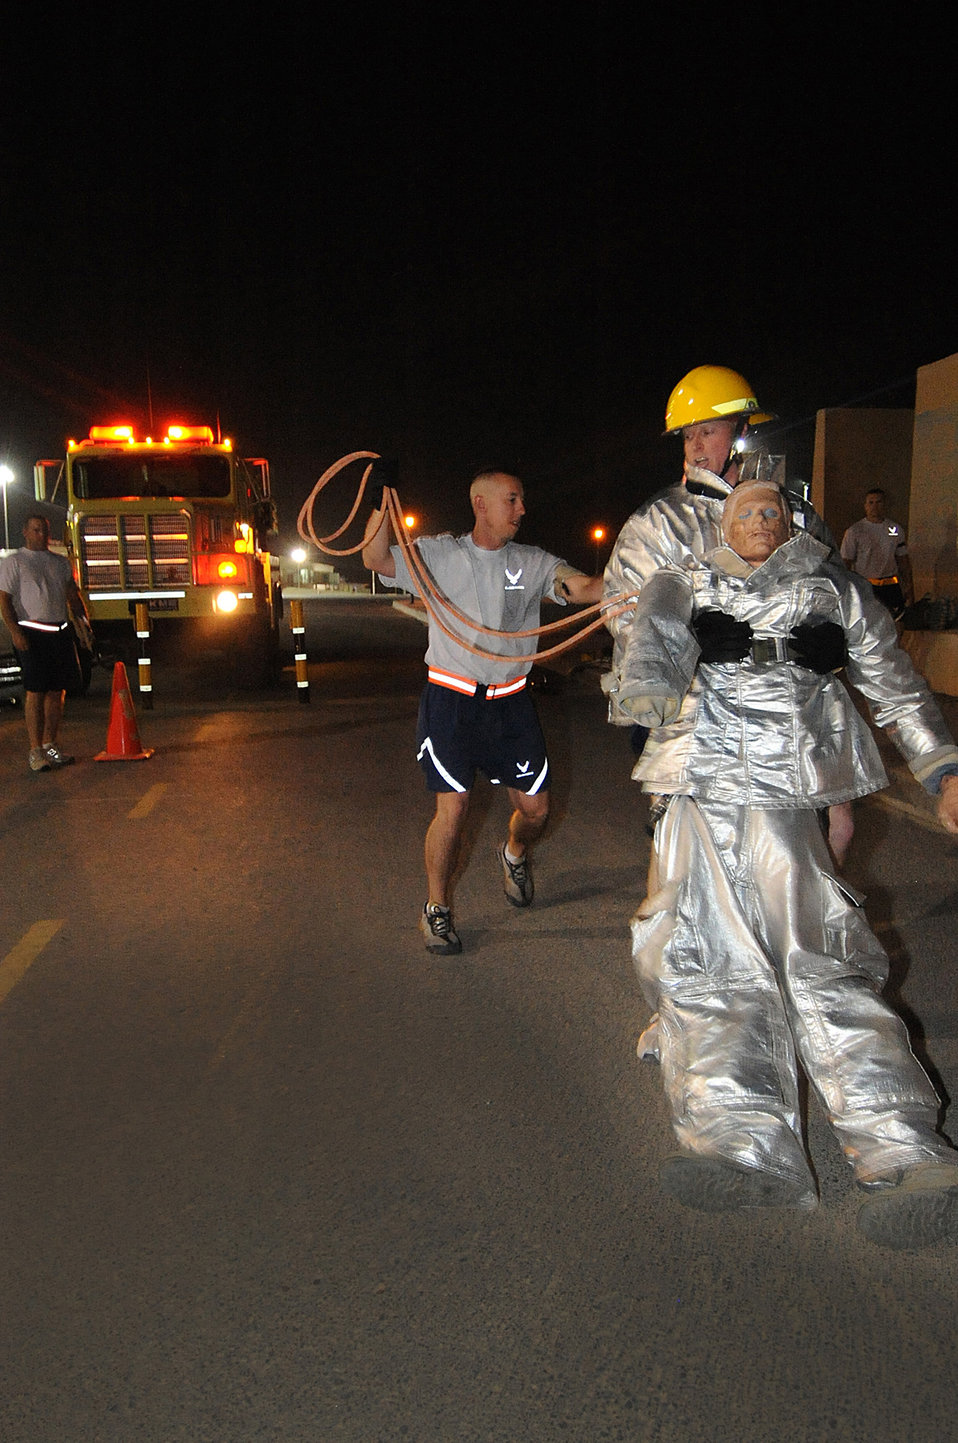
Firefighter challenge

Air Force firefighters carry a dummy May 28, 2011, during a firefighter challenge in Southwest Asia. The challenge featured multiple events, including tool carry, equipment hoist, dummy carry, hose advance, tire strike and hose pack carry.